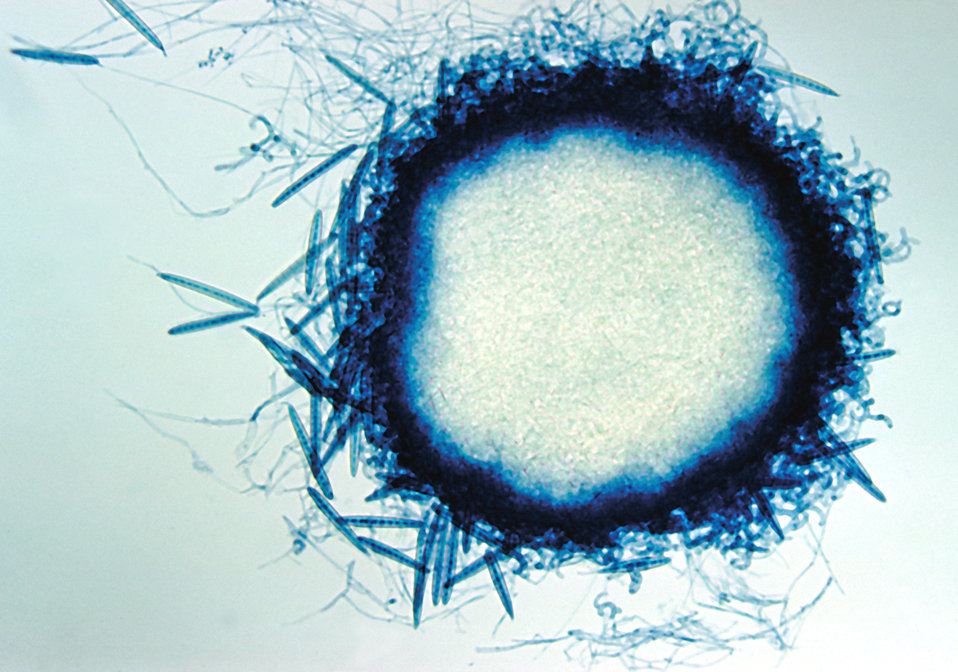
This photomicrograph shows a mature cleistothecium of the fungus Arthroderma grubyi, formerly Nannizzia grubyia.